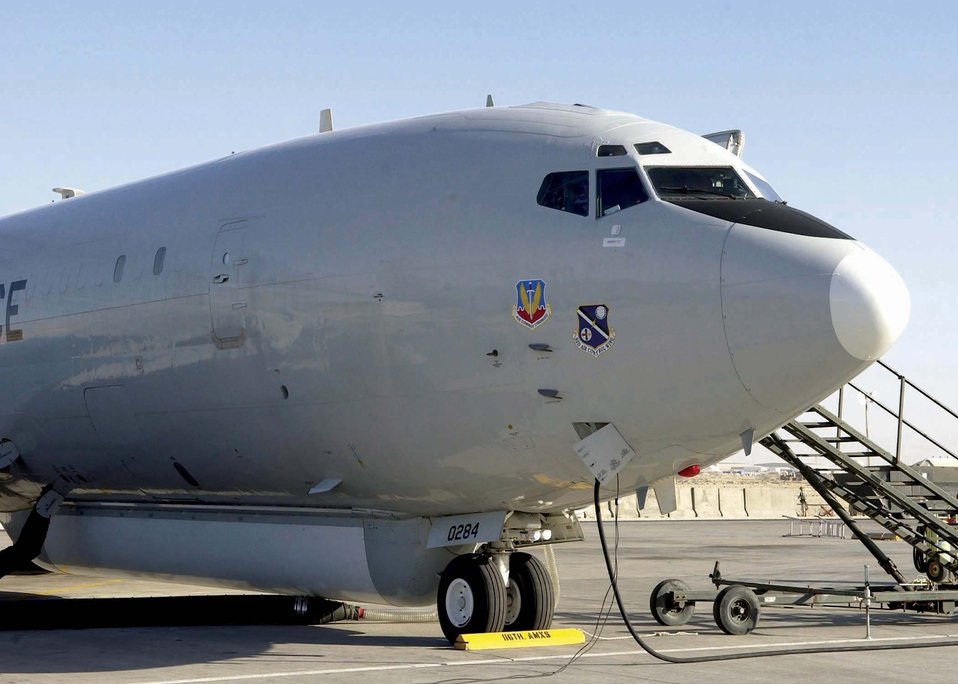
Joint STARS duo reaches troops on the ground

SOUTHWEST ASIA -- E-8C Joint STARS.